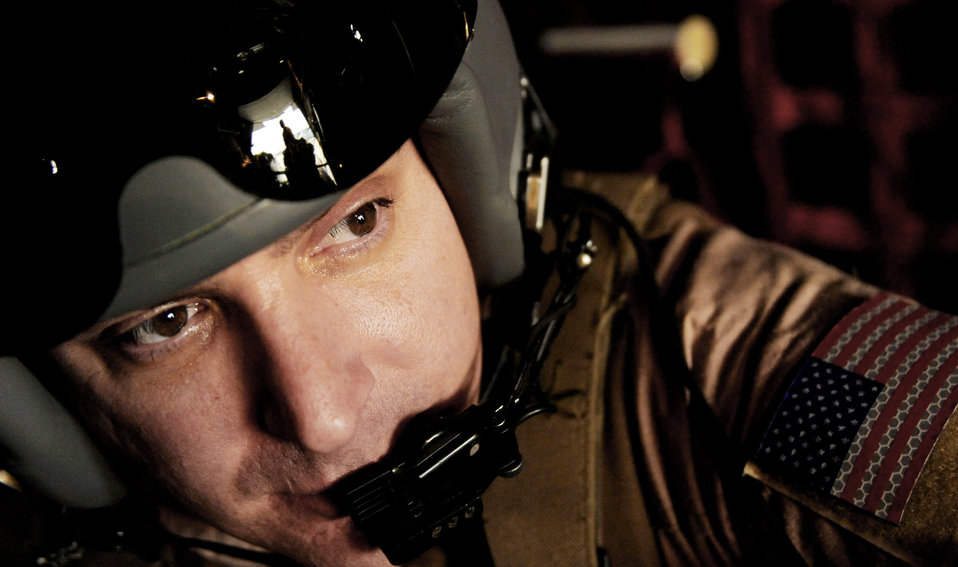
C-130 low-cost, low-altitude combat airdrops now operational

Tech. Sgt. Brian Miliefsky watches as other loadmasters prepare for take-off on a C-130 Hercules Feb. 6, 2010, in Afghanistan. Sergeant Miliefsky is a loadmaster with the 774th Expeditionary Airlift Squadron at Bagram Airfield, Afghanistan.